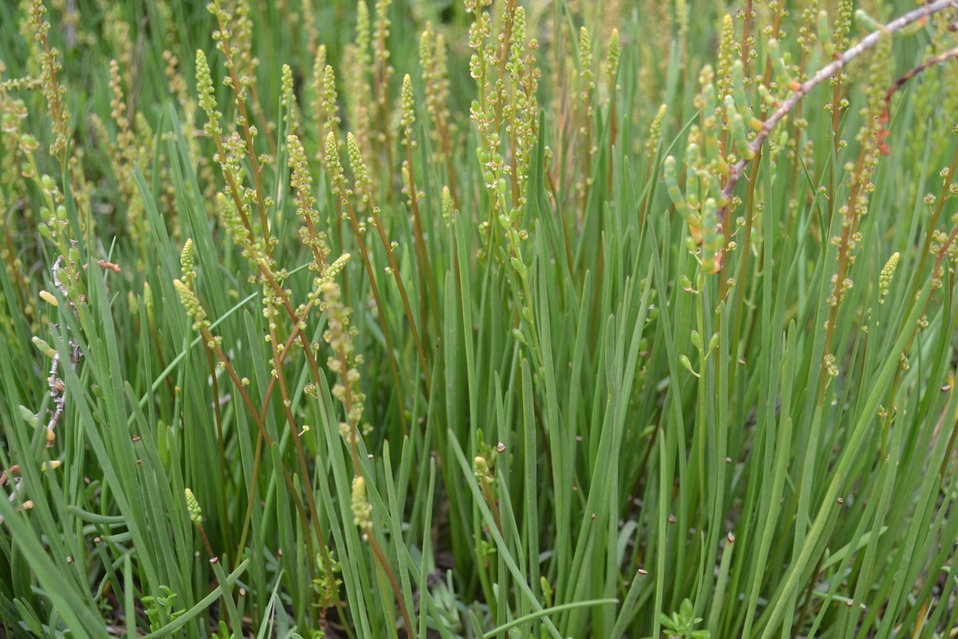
Arrow grass (Triglochin maritimum)